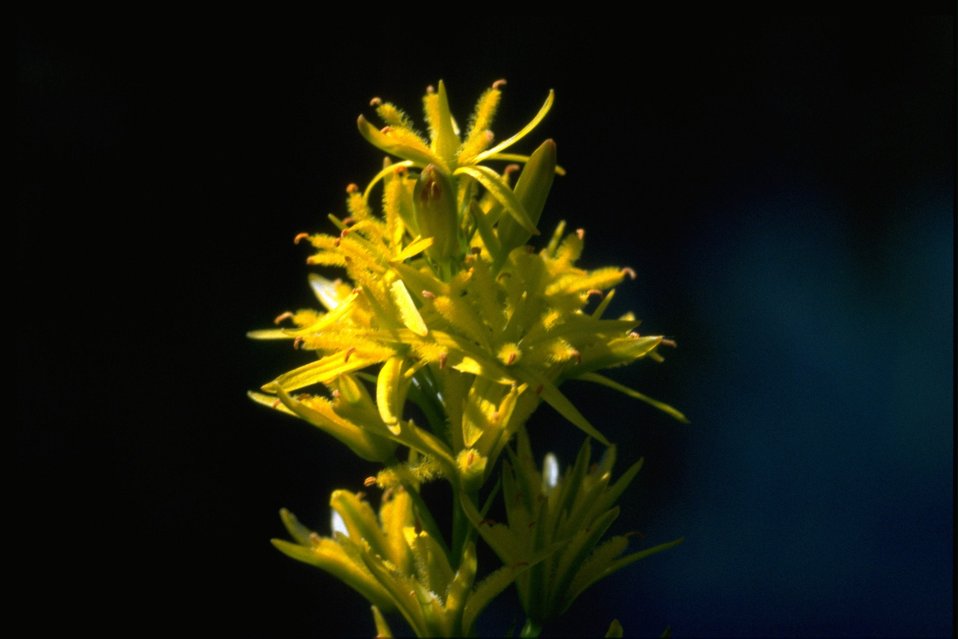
Closeup shot of Northecium californicum.